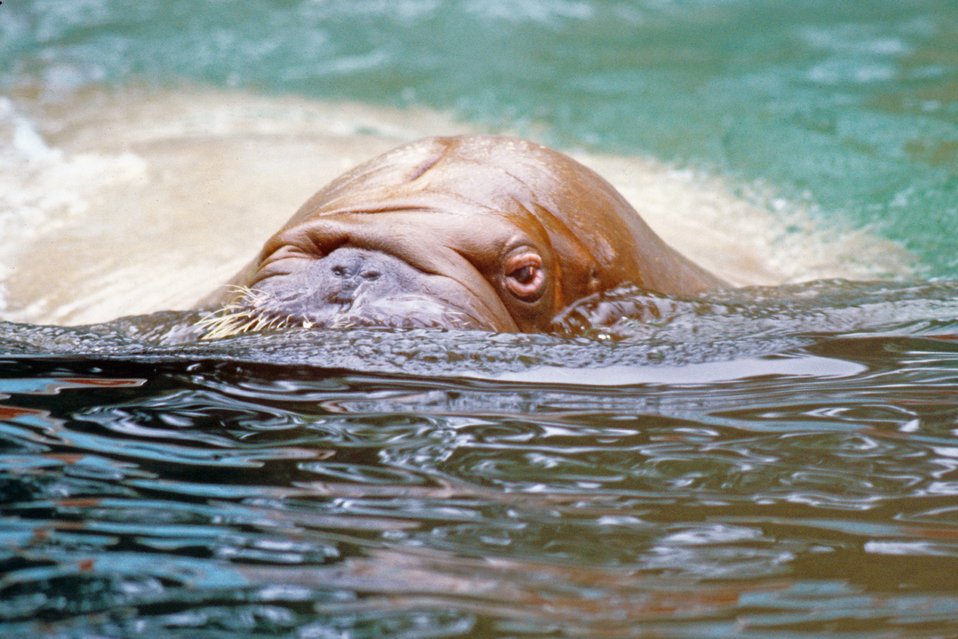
Walrus swimming with eyes and a little bit of mustache above water.